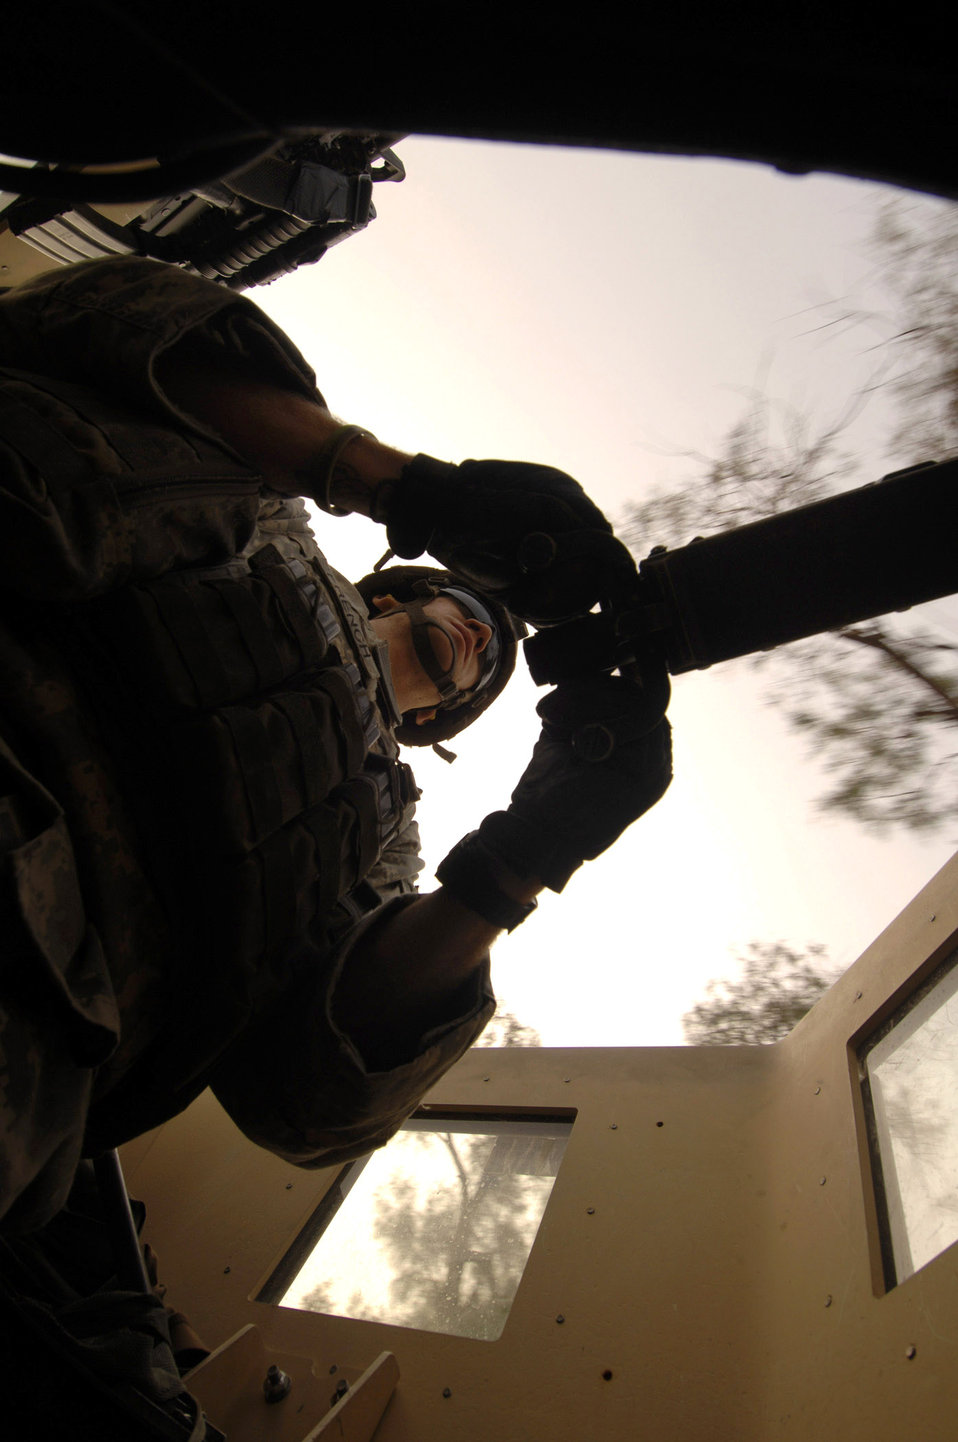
Reconstruction team aids Afghan communities

A gunner keeps a careful eye on traffic from a Humvee turret while on a canal assessment mission with the Nangarhar Provincial Reconstruction Team Nov. 10 in Afghanistan. The PRT assesses community needs and then builds schools, government centers, roads, medical capabilities and basic infrastructure throughout Nangarhar; they also personally mentor Afghan government officials and security forces to provide the Afghan people with the state representation and security they need.